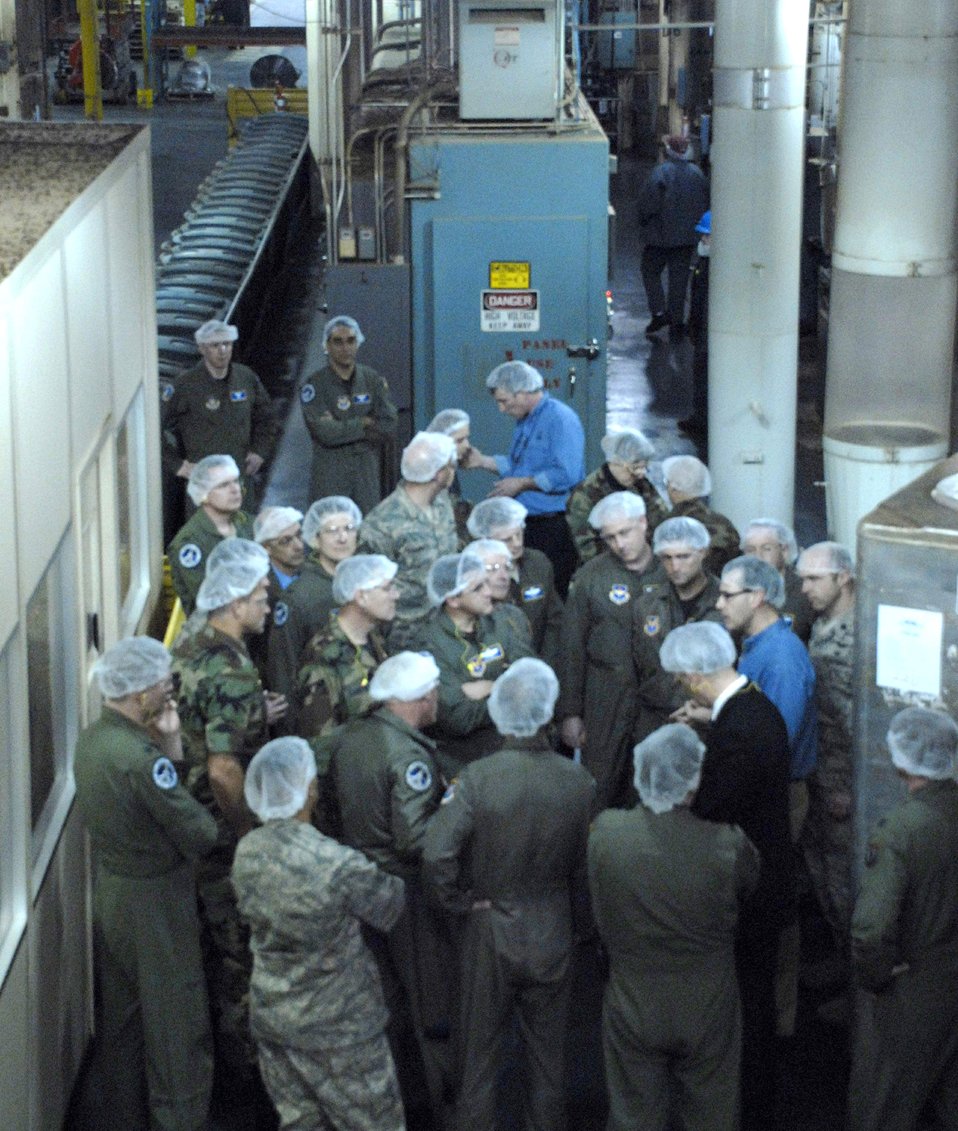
Airmen visit coffee company to learn AFSO 21

Two managers from the Eight O'Clock Coffee Company (blue shirts) speak with a group of Air Force officers and senior NCOs from the Pentagon during a tour of the company's production plant March 12 in Hyattsville, Md. The Airmen were there to gain insight as the company recently incorporated a program similar to Air Force Smart Operations for the 21st century into their work.